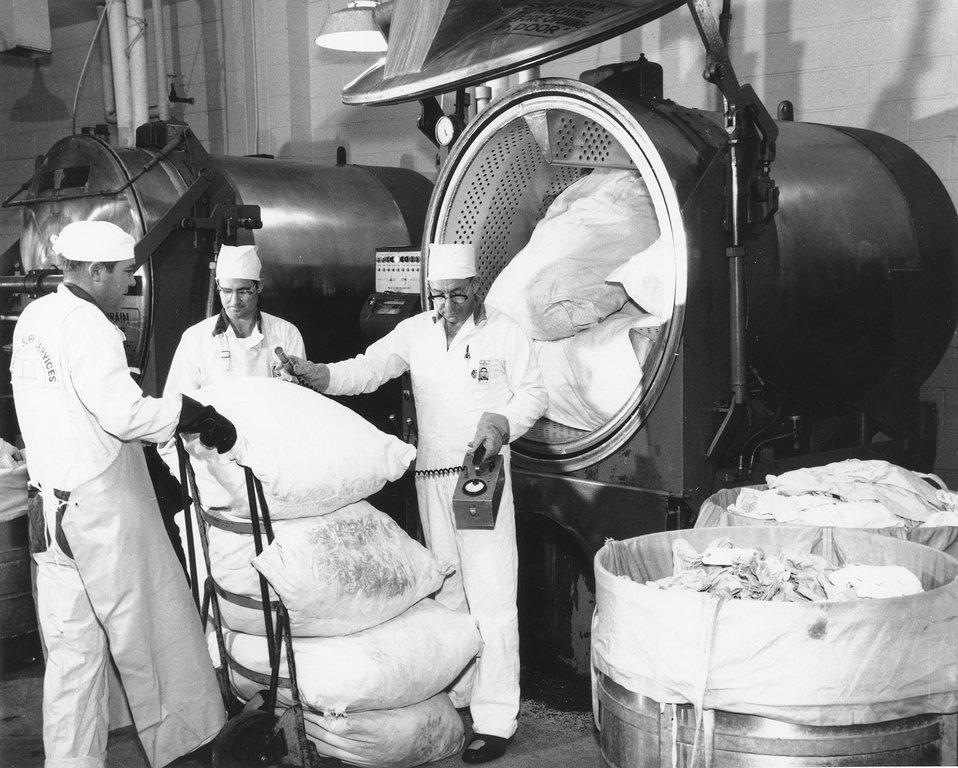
Laundymen at the Hanford Project in Southeastern Washington load a 400-pound capacity washer at the decontamination laundry. c. 1968